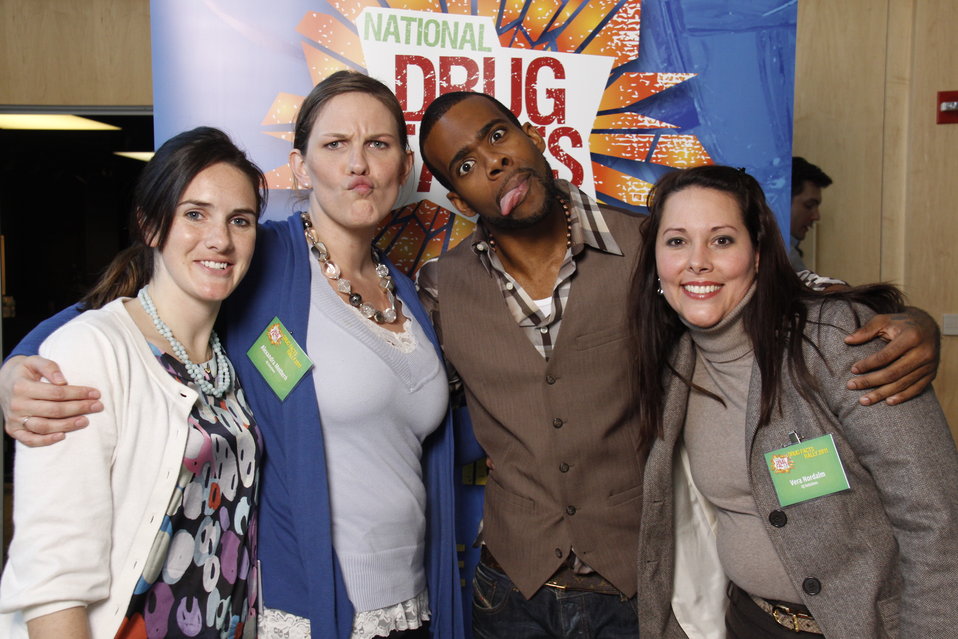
NDFW Mentor Event